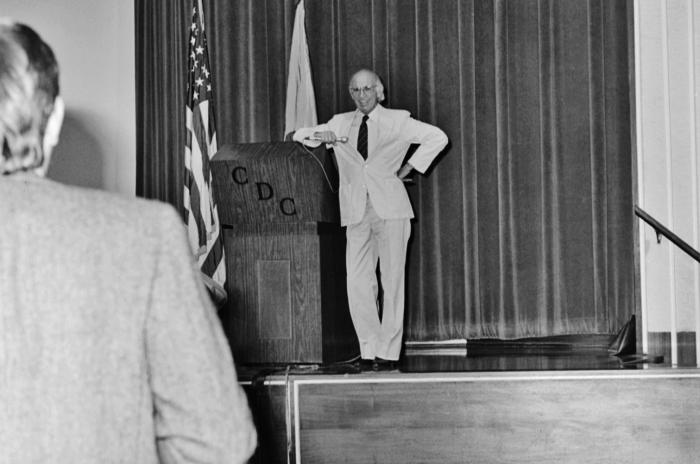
Standing at the podium during his 1988 Centers for Disease Control visit, this photograph showed Dr. Jonas Salk, creator of the first polio vaccine in 1955, fielding questions during his presentation.